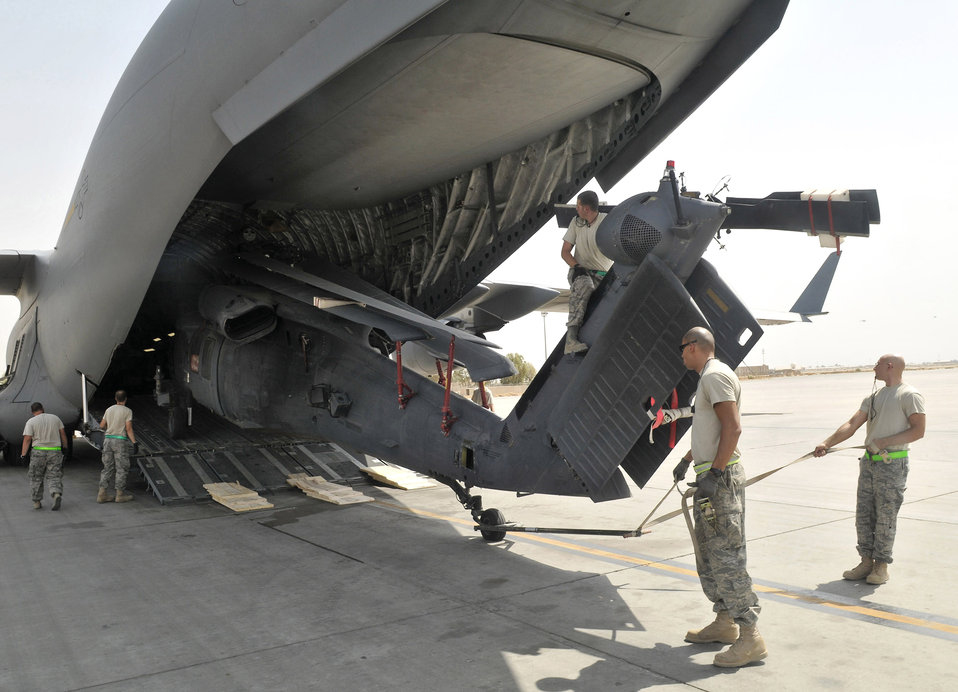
Moving HH-60 Pave Hawks

Airmen of the 332nd Expeditionary Aircraft Maintenance Squadron off-load a HH-60 Pave Hawk from a C-17 Globemaster III cargo aircraft Aug. 12, 2010, at Joint Base Balad, Iraq.